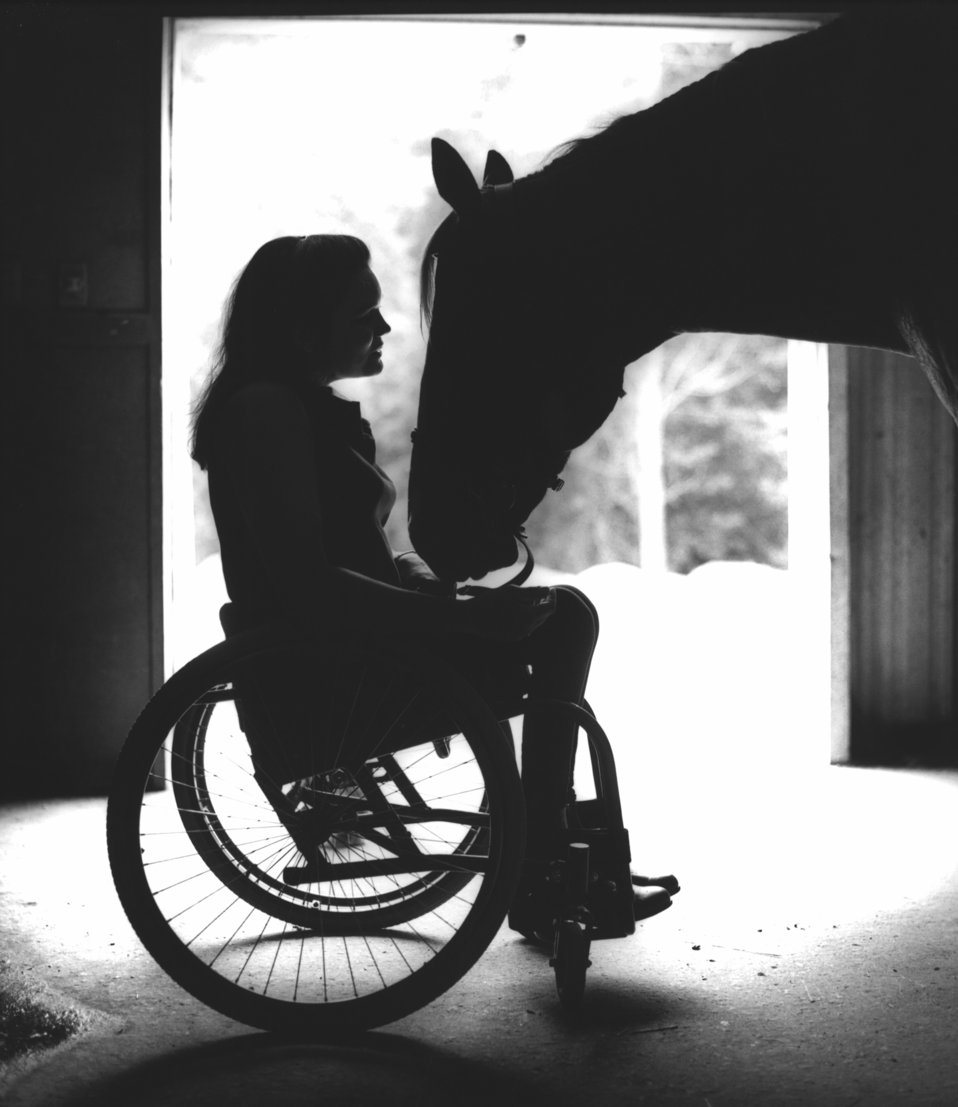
Paralympic equestrian with horse, wheelchair.